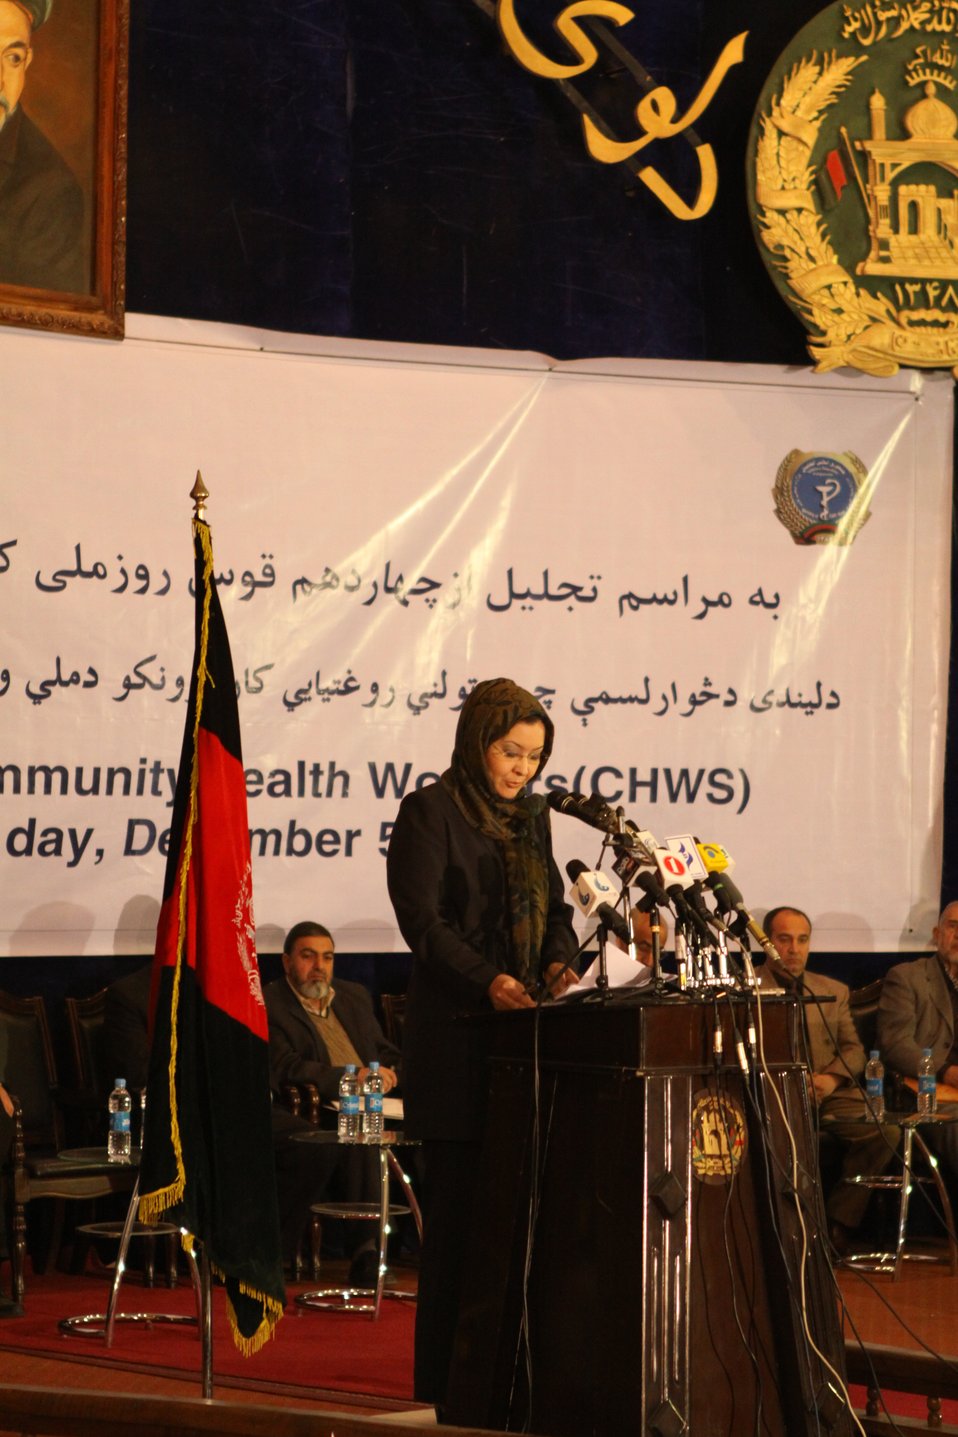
Community Health Workers Celebrated

Kabul, Afghanistan | December 5, 2010 — In support of the United Nations designated International Volunteer Day for Economic and Social Development, Afghanistan’s Ministry of Public Health celebrated its annual Community Health Worker Day today. Acting Minister of Public Health Dr. Suraya Dalil, USAID Senior Deputy Mission Director Robert Hellyer, other government officials, and international donors joined in recognizing the critical contribution of community health workers in Afghanistan and encouraging them to continue their voluntary support to their communities.
The event praised the contributions of the more than 22,000 volunteers throughout the country who deliver community level health-education, counseling, and services out of village health posts located in private homes. The Ministry of Public Health envisioned that community-based healthcare programs will actively encourage communities and families to adopt healthy lifestyles and behaviors, and provide families access to high quality and socially acceptable preventative medicine and life-saving services.
“We have 22,000 community health workers in Afghanistan that are able to implement the basic and standard medicines. They all have been trained through a job description,” said Minister Dalil. Addressing the health workers, she added, “I am proud and feel powerful that I have people like you.”
USAID-funded health projects collaborate closely with the Ministry of Public Health to improve the health and nutritional status of Afghans, provide quality primary healthcare, and promote healthy behaviors at the community and household-levels. USAID supported the training of more than 9,000 of the volunteer community health workers currently working in Afghanistan.
“On behalf of the American people, I congratulate the Community Health Workers for their diligence to gain the skills and knowledge necessary to serve their communities in this important role,” said USAID Senior Deputy Mission Director Hellyer. “USAID strongly supports community based health care and believes that quality community-based health services are essential to reaching Afghanistan’s Millennium Development Goals.”
To support the Basic Package of Health Services, USAID assisted in developing the community health worker training manual, helped train community health worker supervisors and master-trainers, facilitated in-service training, and produced and developed reporting tools, job aids, and education materials.